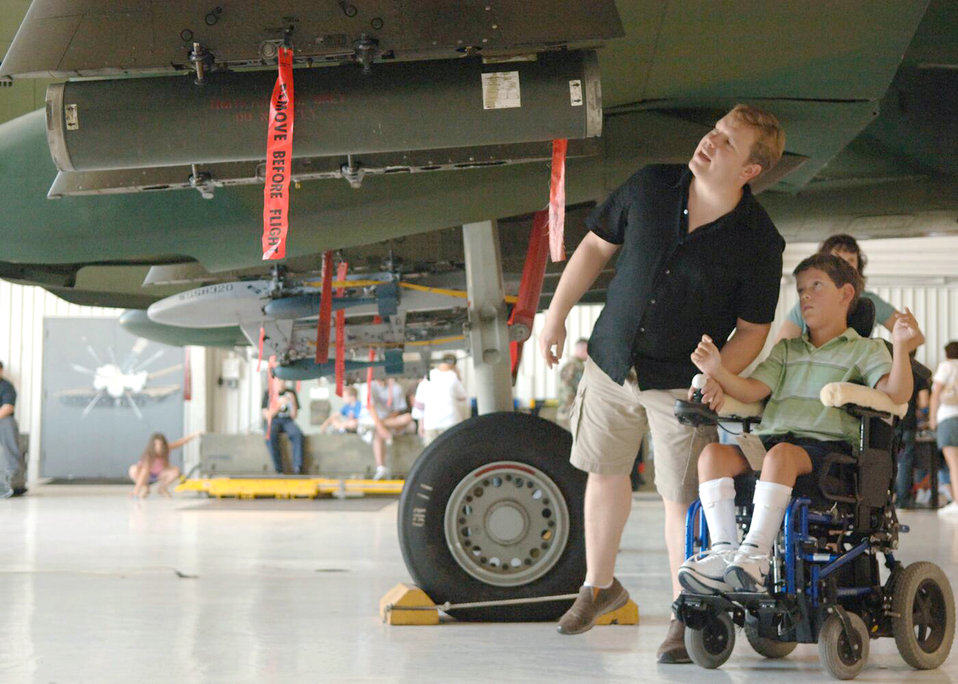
Make-A-Wish

Steve Sayre and his son, Jacob, look at an A-10 Thunderbolt II during a tour of Davis-Monthan Air Force Base, Ariz., on July 17. The Make-A-Wish Foundation teamed with Davis-Monthan to offer a tour of the base for Jacob and other Make-A-Wish children as well as their families. The tour consisted of demonstrations by an explosive ordnance disposal robot, base fire department and a weapons load crew for an A-10.